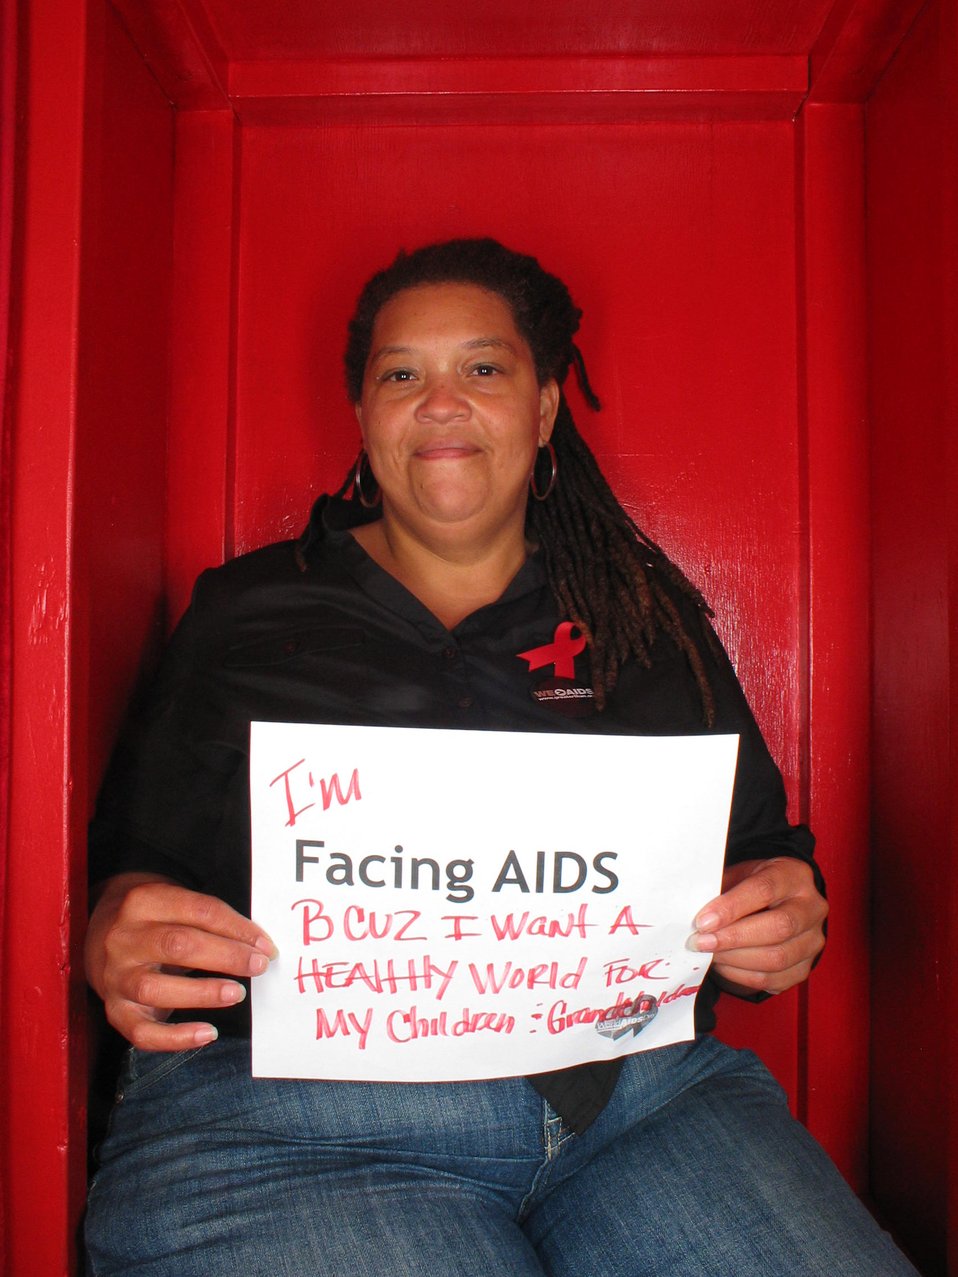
I'm Facing AIDS bcuz I want a healthy world for my children and grandchildren.